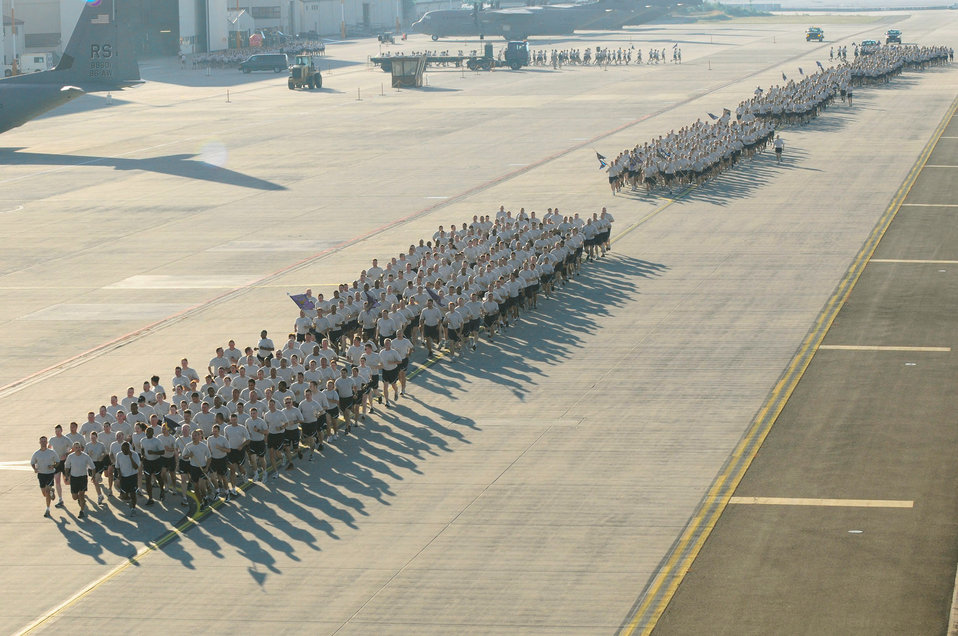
Taking a morning run

Airmen from the 86th Airlift Wing participate in a wing run at Ramstein Air Base, Germany, July 8, 2010. The wing run was designed to promote esprit de corps and unity as well as emphasize the importance of fitness.